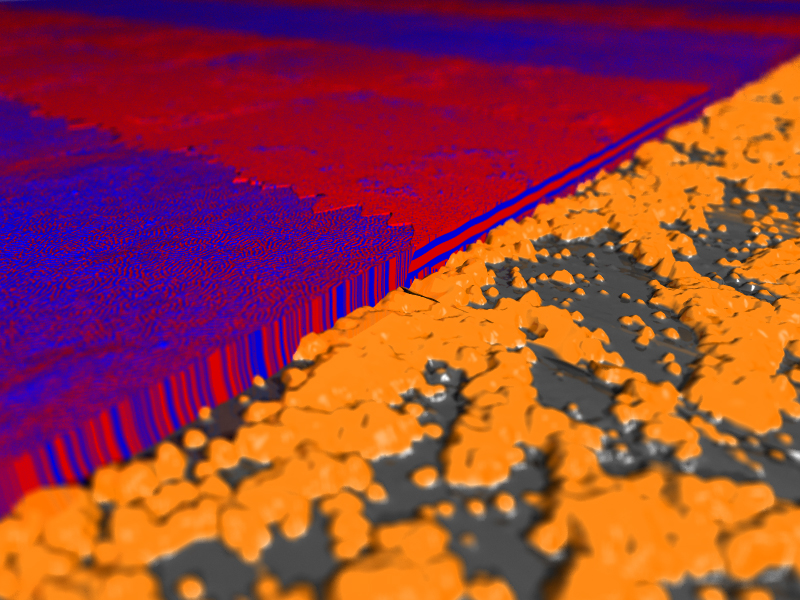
Co-Polymers; Microelectronics

A novel technique for controlling the orientation of nanostructures (red and blue) is to use disordered, roughened substrates. Silica nanoparticles (orange), cast onto silicon substrates (grey), create 'tunable' substrates which can control self-assembly, despite inherent disorder.